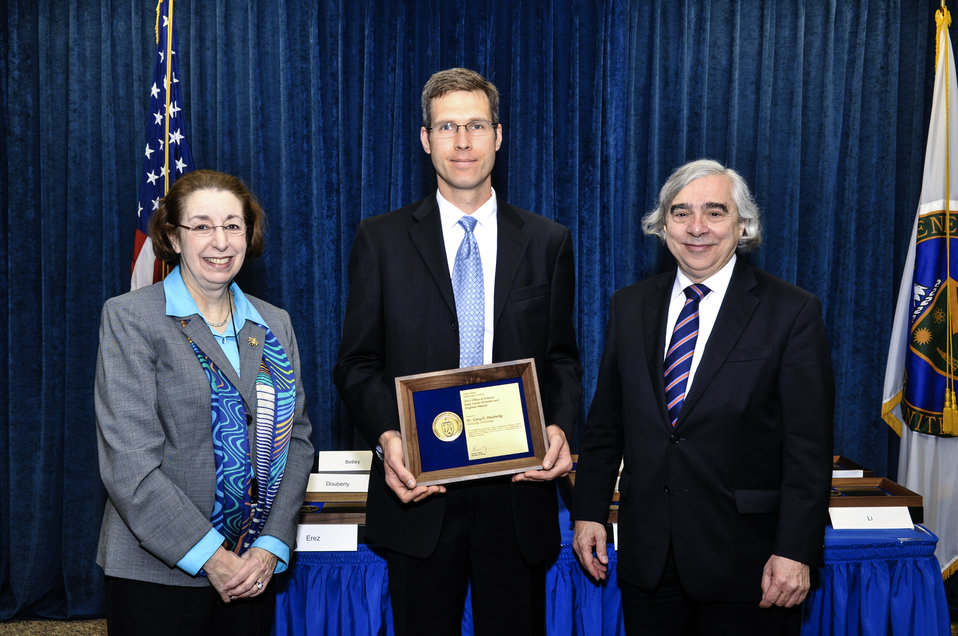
PECASE awards ceremony - DOE Secretary E. Moniz with DOE Office of Science Acting Director Pat Dehmer, PECASE Awardee Gary Douberly on April 14, 2014